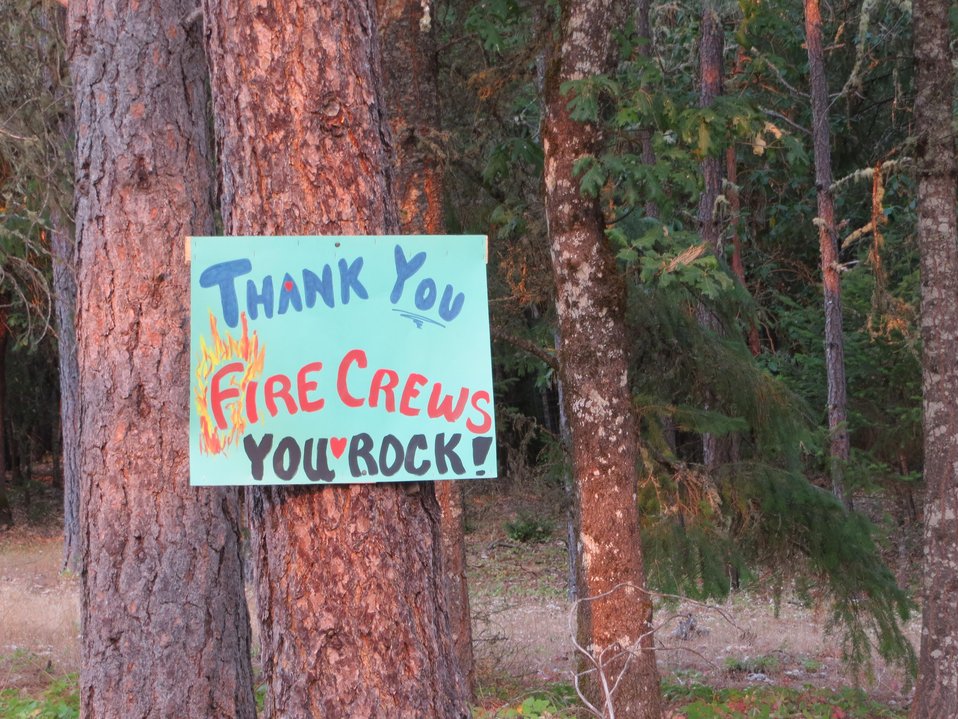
Grants Pass, OR residents post thank you posters for the fire crews that are working on the Big Windy Complex Fires. The Big Windy Complex Fires consists of three fires: The Big Windy Fire, Calvert Peak Fire, and Jenny Fire (formerly the Windy 16 Fire) near Grants Pass, OR. The fires began on Jul. 26, 2013 by lighting have consumed approximately 7, 499 acres.